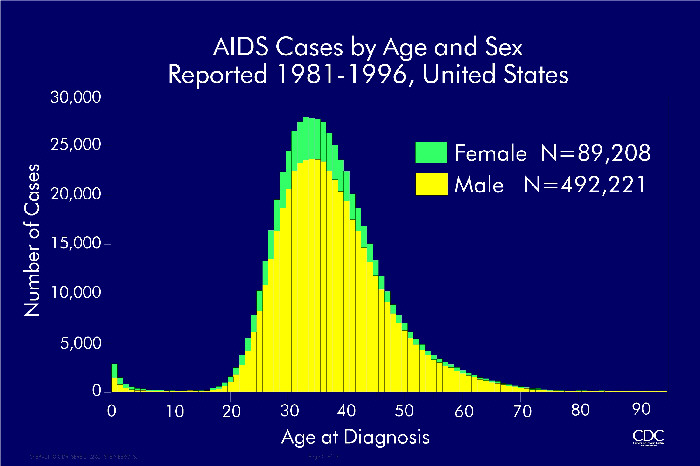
Aids Cases by Age and Sex